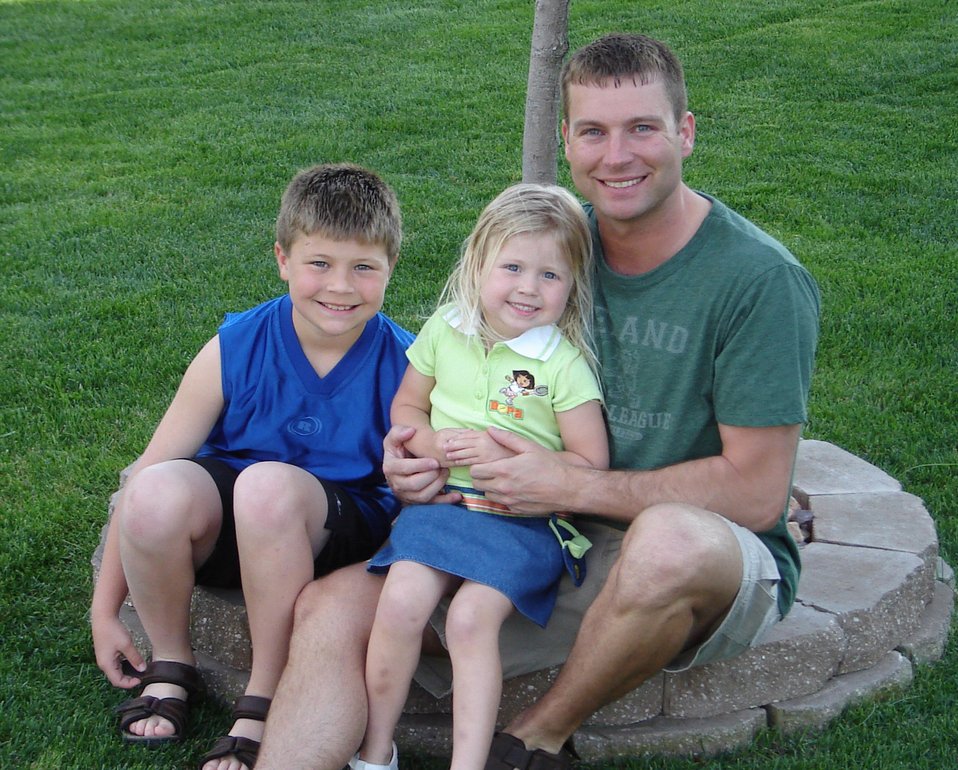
Single-parent dads deal positively with deployment

Master Sgt. James Morbach and his two children, Kyle, 9, and Alyssa, 5, pose for a family portrait. Sergeant Morbach is a first sergeant assigned to the 732nd Expeditionary Security Forces Squadron at Balad Air Base, Iraq. He is a Nebraska Air National Guard member assigned to the 155th Air Reserve Wing.